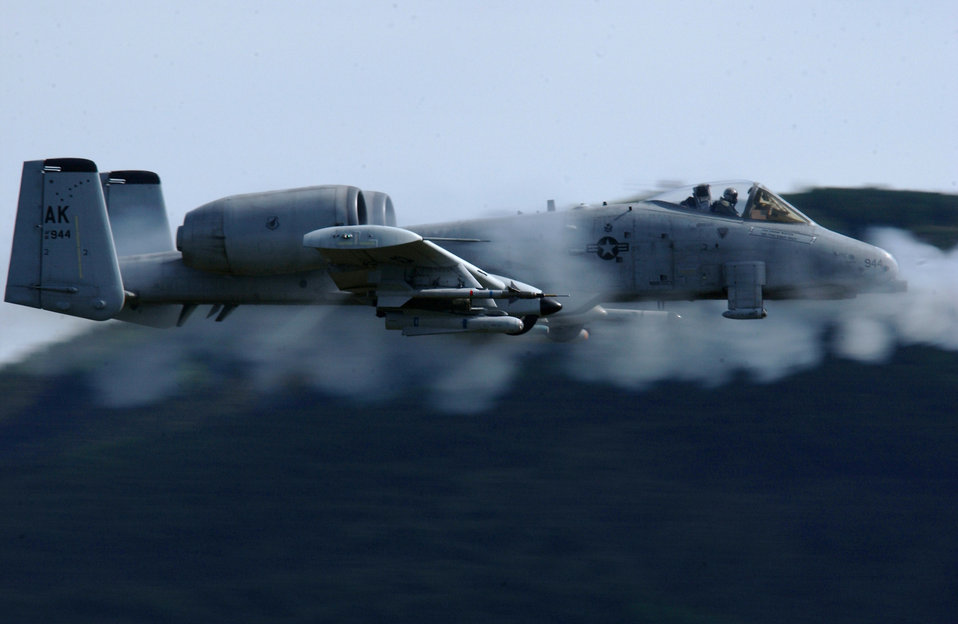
Air to ground power

An A-10 Thunderbolt II fires a 30mm GAU-8 Avenger seven-barrel Gatling gun at a rate of 3,900 rounds a minute May 29 over the Pacific Alaska Range Complex in Alaska. The A-10 is assigned to the 355th Fighter Squadron from Eielson Air Force Base, Alaska. The 355th FS's primary missions include air strike control, close air support, target interdiction, joint air attack team, combat escort, and combat search and rescue.